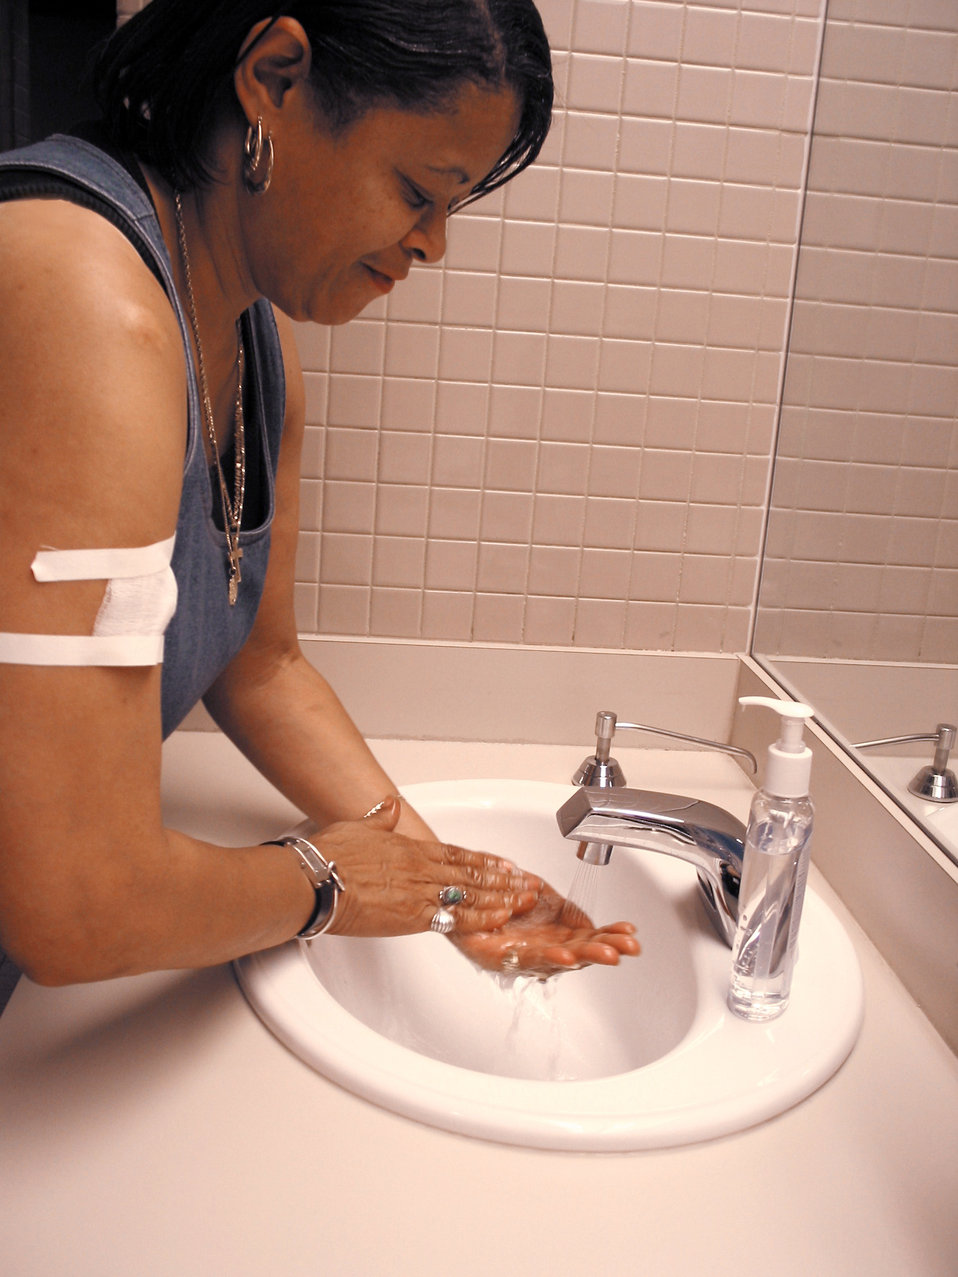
This image demonstrates how a smallpox vaccinee washes her hands after handling her vaccination site bandage.